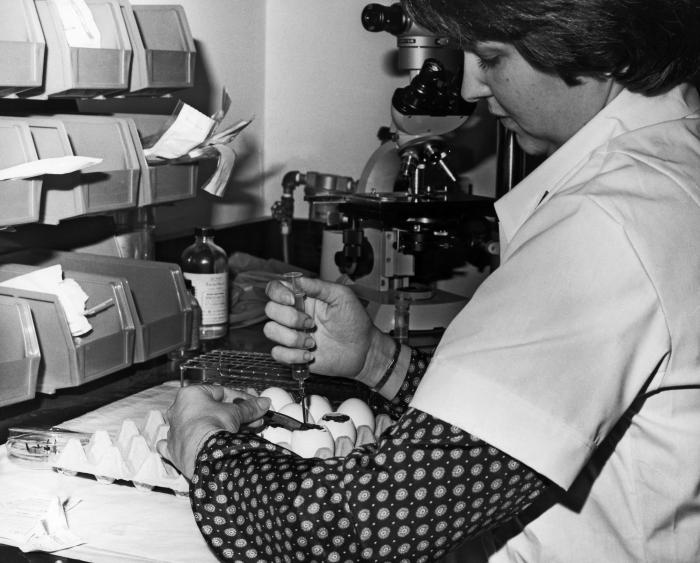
This 1968 photograph depicted Penny Gentry, a Centers for Disease Control laboratorian, as she was inoculating 10-day-old embryonated chicken eggs with specimens that were suspected of containing influenza virus.